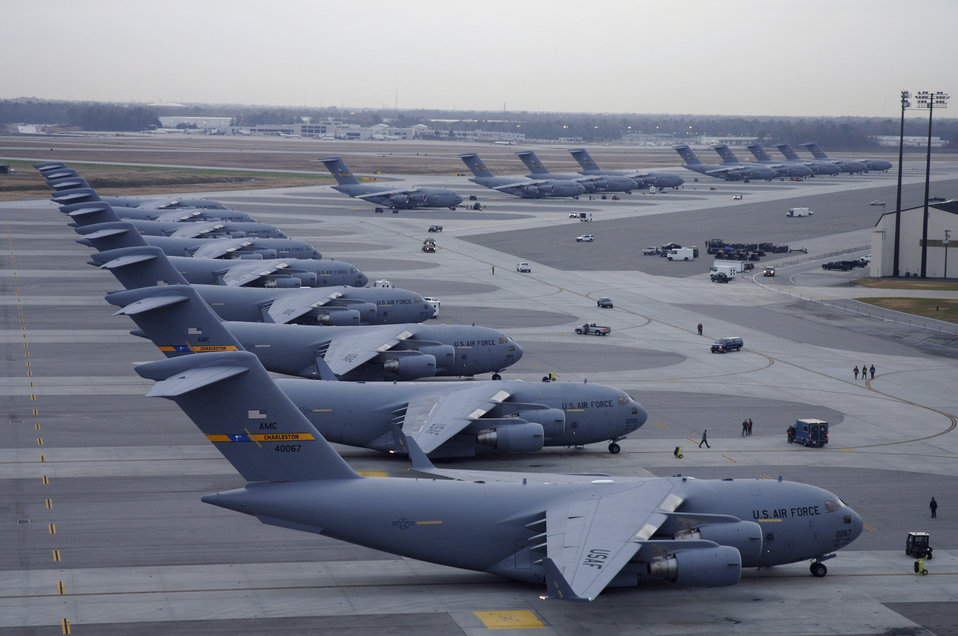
Globemasters galore

A line of C-17 Globemaster III's are parked on the runway Dec. 21 at Charleston Air Force Base, S.C. The C-17 is capable of rapid, strategic delivery of troops and all types of cargo. The design of the aircraft allows it to operate on small, austere airfields. It can take off and land on runways as short as 3,500 feet and 90 feet wide.